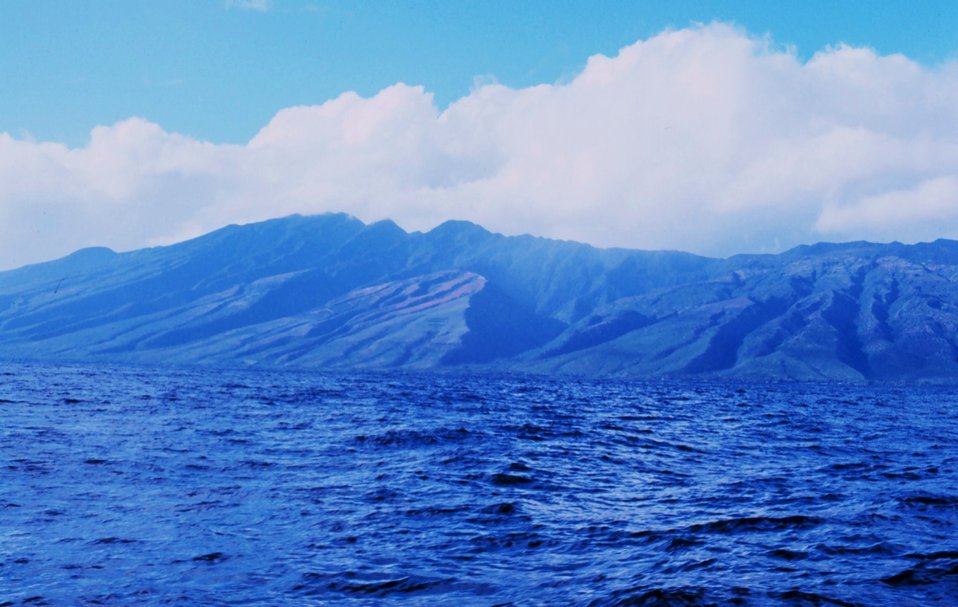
Lanai-Maui trip